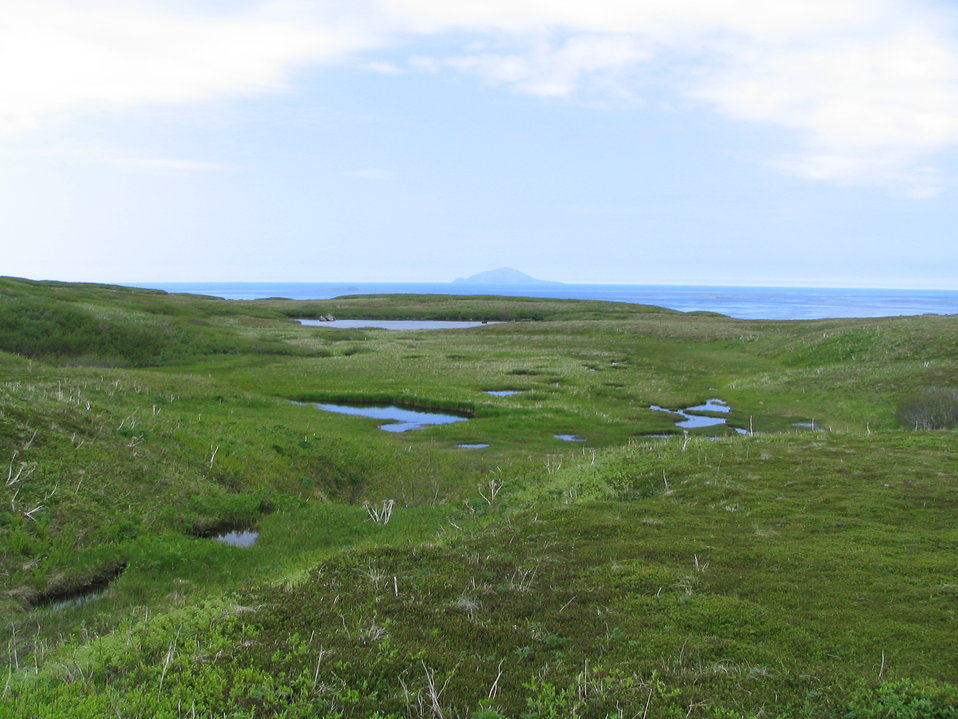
Izembek Wilderness

Wilderness near Frosty Peak, Izembek National Wildlife Refuge
Photo by Kristine Sowl,
USFWS, Public Domain